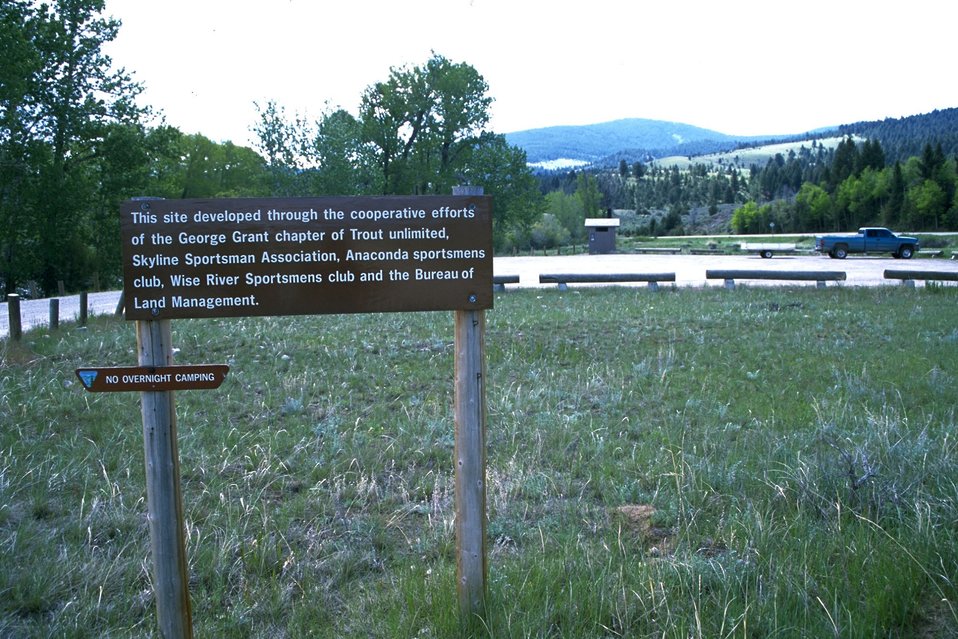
Interpretive sign at the Jerry Creek Day Use Area